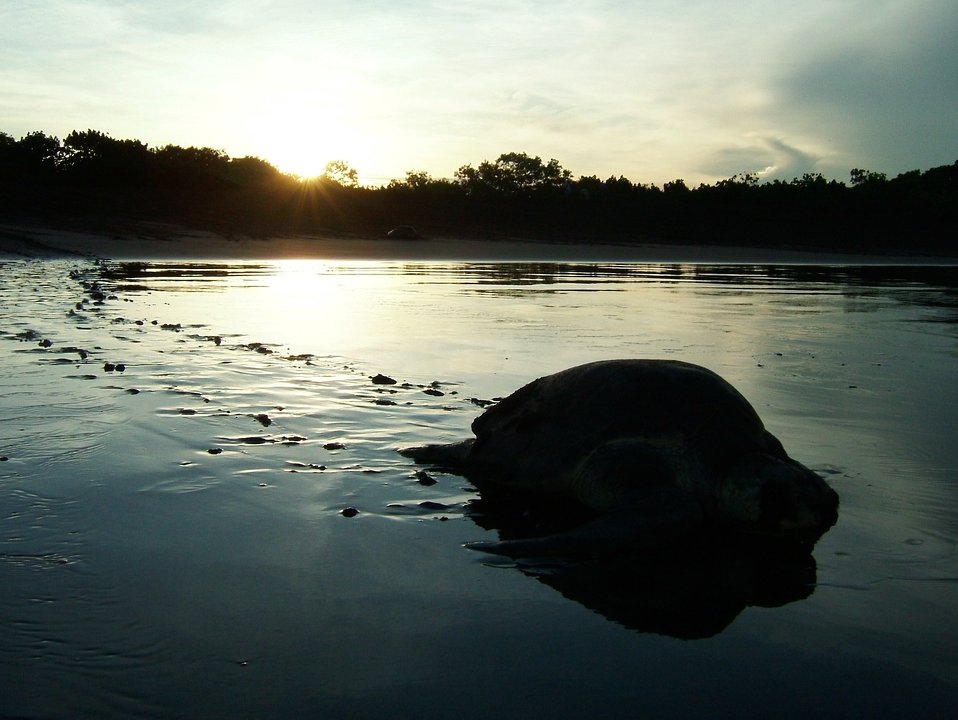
Sea turtle returning to sea after laying eggs.